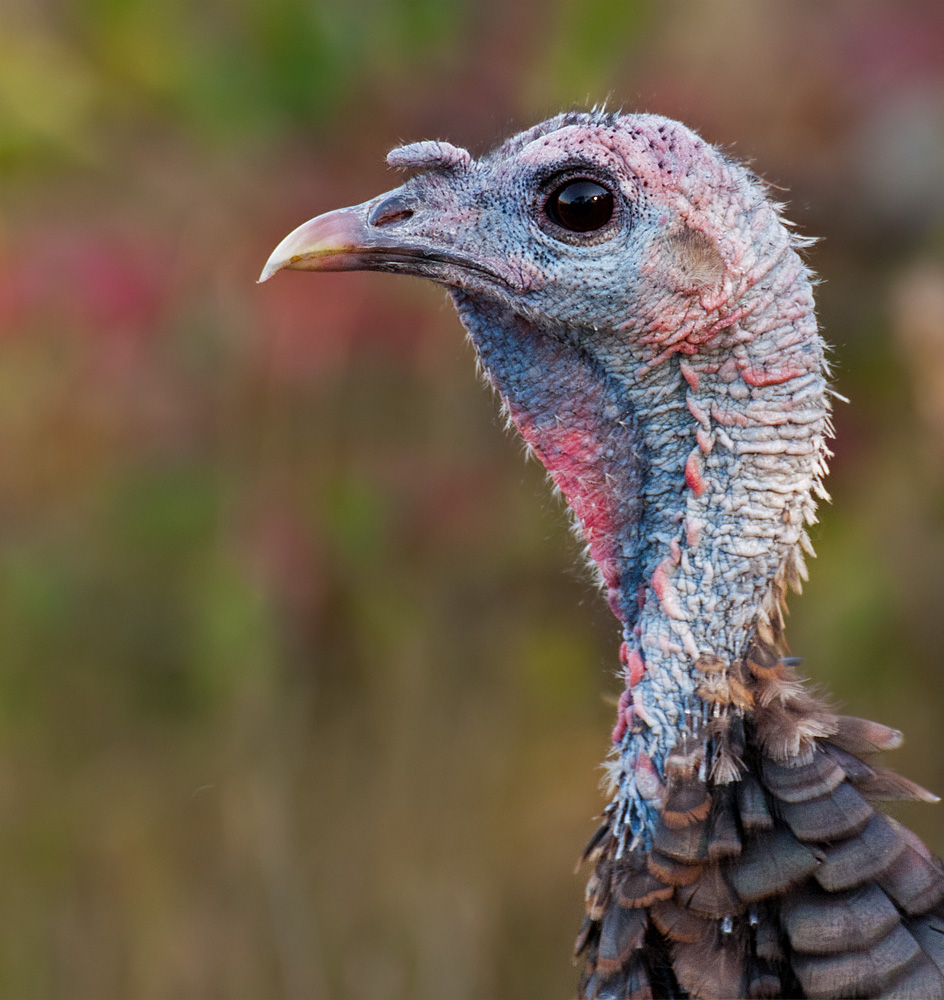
Turkey

Parker River National Wildlife Refuge, MA.